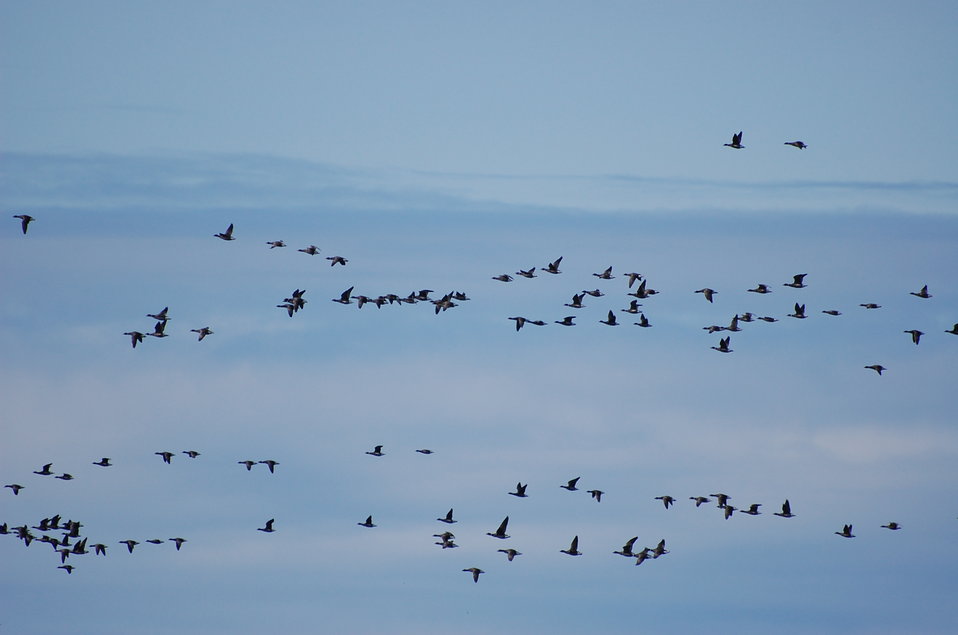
Brant at Izembek Lagoon

Izembek National Wildlife Refuge